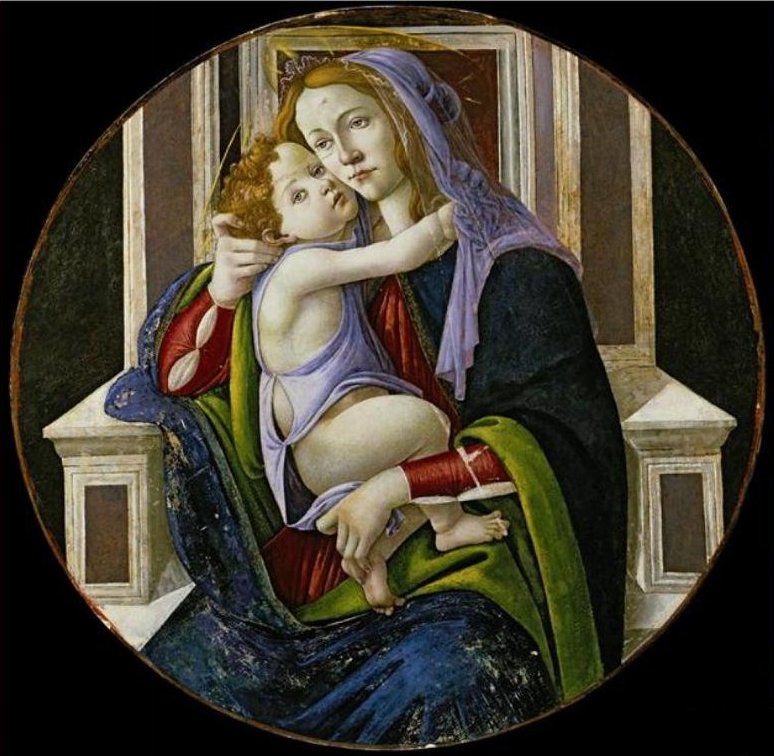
'Madonna and Child', painting by a follower of Sandro Botticelli, c. 1500-1510, El Paso Museum of Art